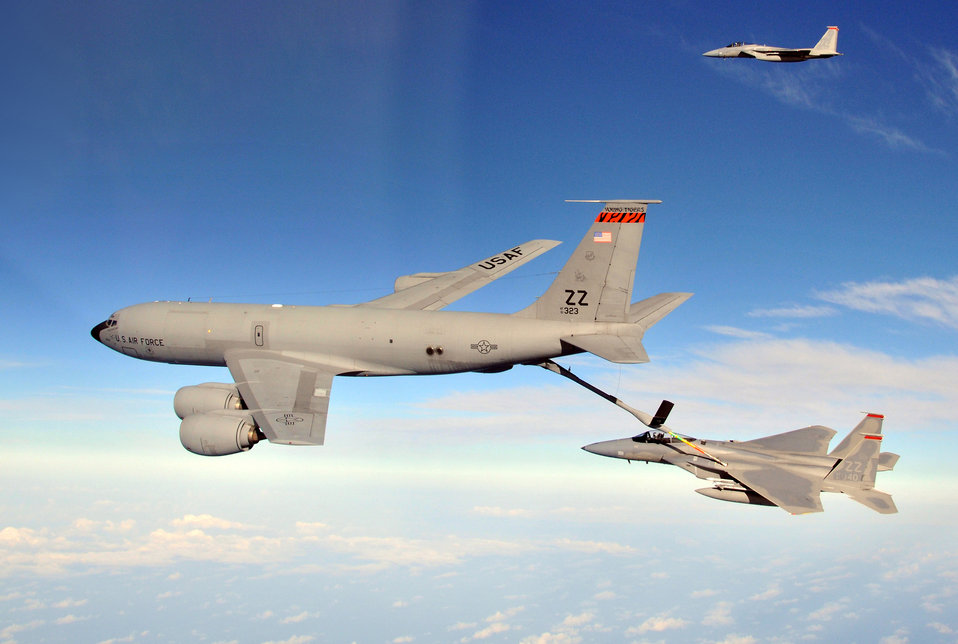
Joint Bilateral Training

F-15C Eagles from the 67th Fighter Squadron at Kadena Air Base, Japan, are refueled by a KC-135 Stratotanker from the 909th Air Refueling Squadron during joint bilateral training with other U.S. forces and the Japan Air Self Defense Force Feb. 25, 2010.